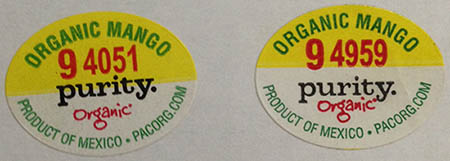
RECALLED – Organic Mangos

May 5, 2014 – Product Recall – Pacific Organic Produce Announce Voluntary Recall of Mangos Due to Possible Health Risk.